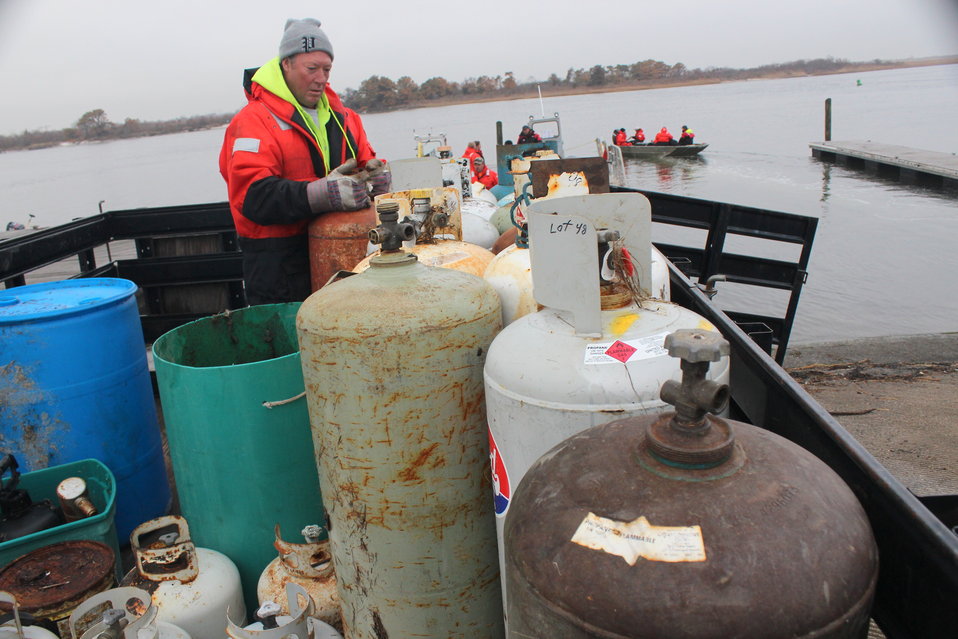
December 8, 2012 Containers collected along shoreline, Captree State Park, Suffolk County, New York

During the first week of December, EPA sent out multiple crews to search for and remove potentially hazardous containers. Many of the shoreline areas were only accessible by boat. These operations covered areas within Jamaica Bay and the western end of Great South Bay, Long Island, New York.